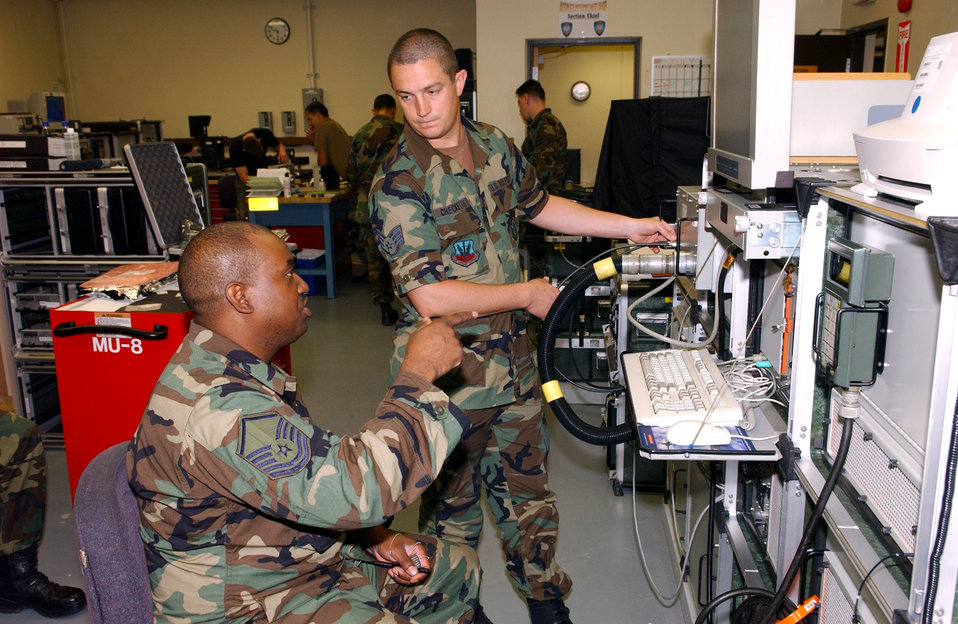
Troubleshooters

Master Sgt. David Ligon (seated) and Staff Sgt. Robert Checketts run calibration tests in the avionics intermediate shop at Kunsan Air Base, South Korea, on Thursday, July 6. Sergeant Ligon is assigned to the Colorado Air National Guard's 140th Fighter Wing. Sergeant Checketts is assigned to Kunsan's 8th Maintenance Squadron.